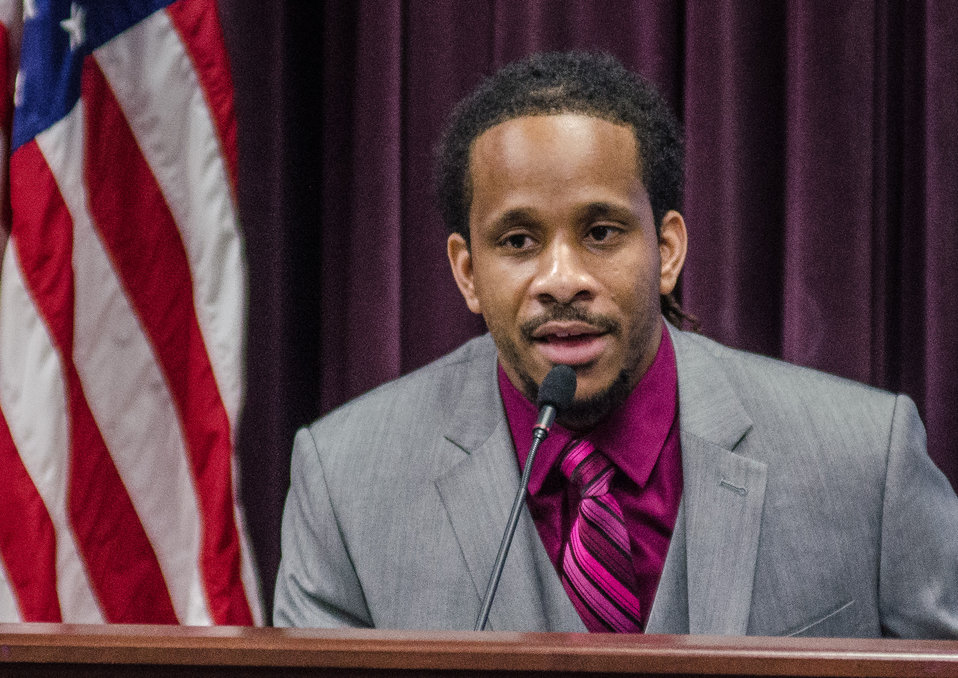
U.S. Department of Agriculture (USDA) Office of Advocacy and Outreach at Virginia State University (VSU) 1890 Program Liaison and event organizer Antonio McLaren welcomes farmers to the VSU, USDA and Virginia Farmers Working Together” outreach workshop in the VSU, L. Douglas Wilder building on Thursday, March 7, 2013, in Petersburg, VA. Farmers shared and learned new ways to do more with USDA services, and how to apply for programs that will help grow their business.